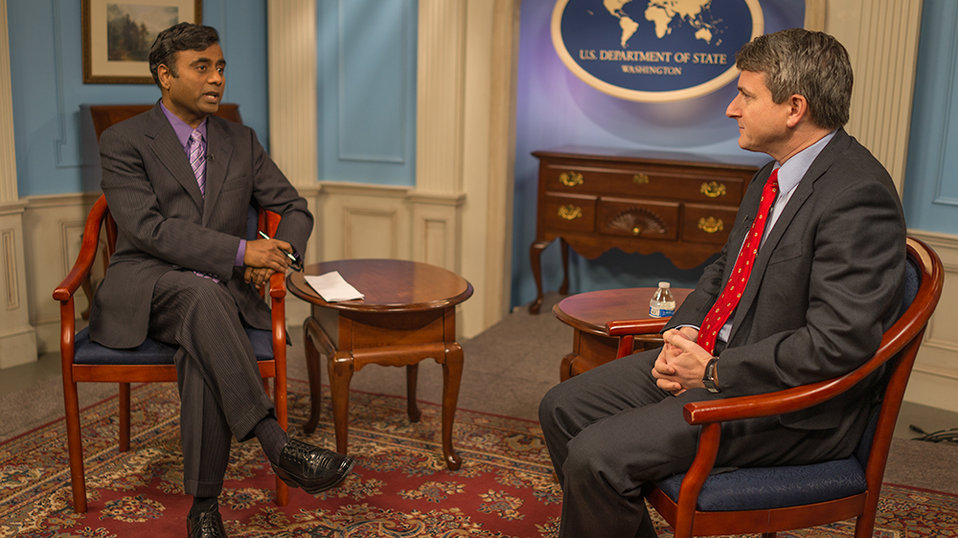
VOA Urdu Reporter Rehman Interviews Special Representative Feldman

Voice of America Urdu reporter Faiz Rehman interviews Deputy to the Special Representative for Afghanistan and Pakistan Daniel Feldman at the U.S. Department of State in Washington, D.C., on February 5, 2014.